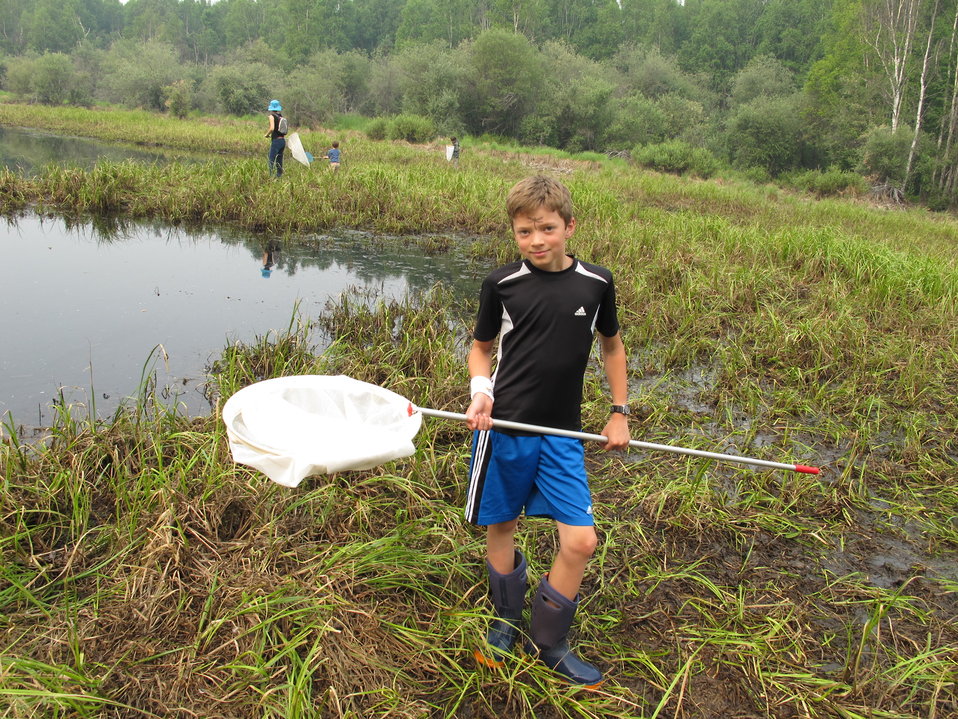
Dragonfly Day 2013

(USFWS)